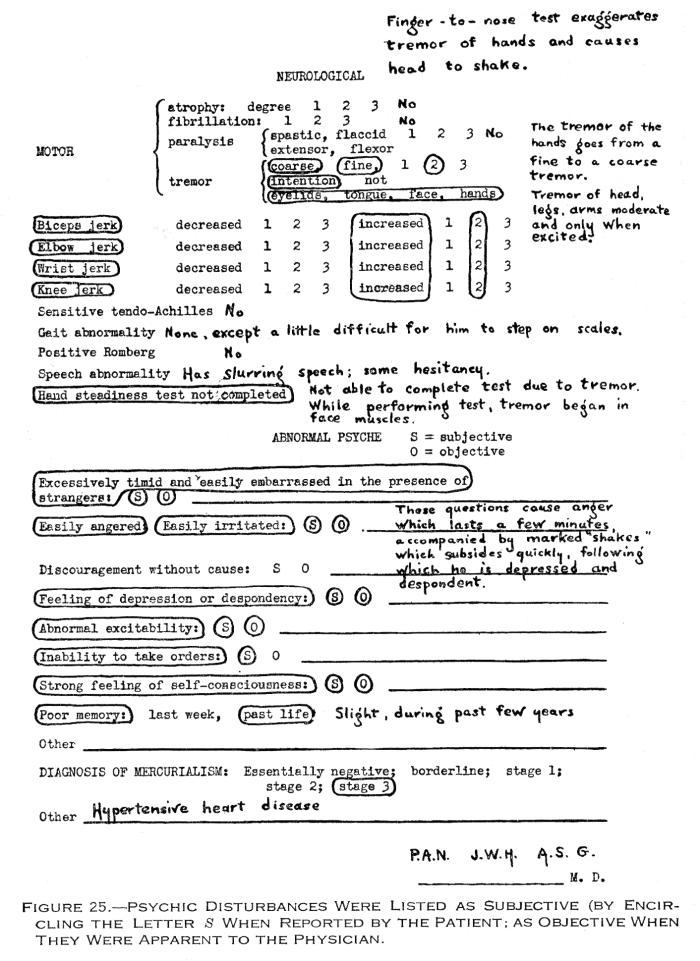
This historical image was provided by the Center for Disease Control's (CDC), National Institute for Occupational Safety and Health (NIOSH). Depicted, was a page from a written medical questionnaire, recorded during a history and physical examination of a fur cutter, who'd been exposed to mercury in a hat manufacturing plant. Fur processing involves the use of mercury in the form of mercury nitrate, which renders the fur suitable for manufacturing hats. If precautions were not taken, such as wearing a filtered breathing mask, or gloves, mercury exposure was quite likely, and could have lead to heavy metal poisoning, with severe pathologic neurological consequences. The image was published in the 'Public Health Bulletin', No. 263, Fig. 25, 1941.